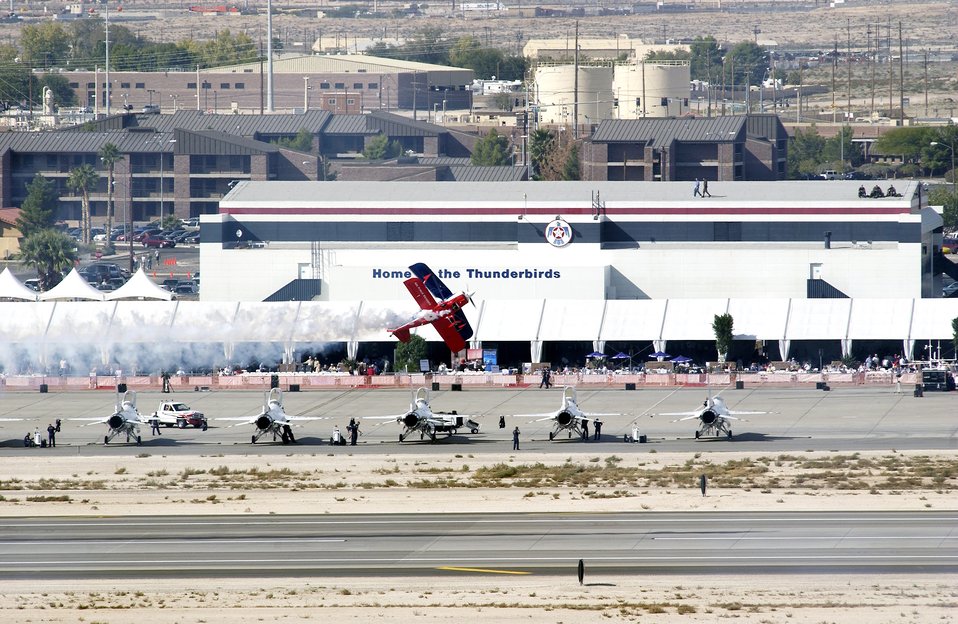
2005 air show Nellis AFB Nevada

NELLIS AIR FORCE BASE, Nev. (AFPN) -- Maj. Ed Hamill does an acrobatic maneuver in his